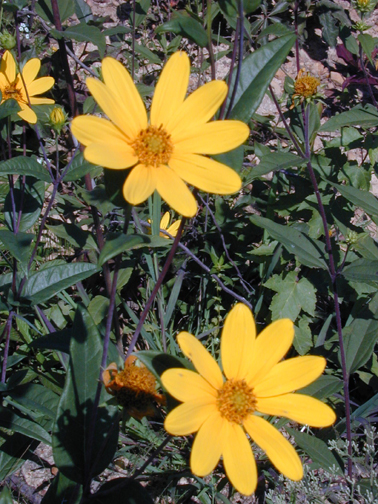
Arnold AFB brings home DOD environmental award

Managing the comeback and delisting of the Eggert's sunflower is one of the reasons why Arnold Air Force Base, Tenn., won the 2006 Gen. Thomas D. White Environmental Award for Natural Resources Conservation.